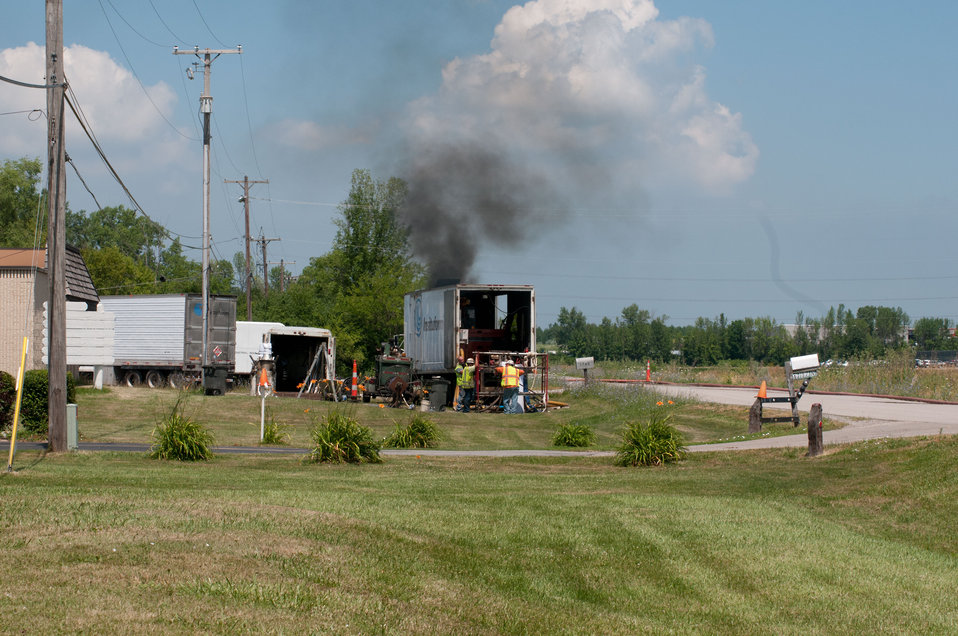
Gardens and roadways did not have to be dug up for the Buena Vista Township Phase II Sewer Project, in Michigan, where the United States Department of Agriculture funded the refurbishment and rehabilitation of 45,500 linear feet of defective sewer pipe, and more than 200 manholes; on Tuesday, July 19, 2011. The project includes the construction of an off-site excess flow basin; construction of a pump station; and improvements at the wastewater treatment plant. The system will serve 2,349 residential and 177 commercial customers and will bring the township into compliance with environmental regulations regarding pollutant discharges.
Inspections revealed that the 1960s sanitary sewer system had inflow from storm and rainwater systems and overflowed into the sanitary sewer system. Infiltration was found in the form of cracks, and other failures that allowed groundwater to enter. Rather than digging up the old system, rehabilitation with a cured-in-place-pipe (CIPP) method was chosen. This provides up to a 50% savings and the liner is projected to last 50-100 years. CIPP repair of the 8-30” diameter pipes involves pulling a resin-saturated fabric liner through a damaged pipe, which is then cured with steam or hot water to form a tight-fitting, joint less replacement pipe. Trenchless repair methods require less digging than traditional “dig and replace” repair methods and minimize damage to yards and landscaping. There are two of these teams and one manhole rehabilitation to seal the underground casting frame or brick structure. They process 600-800 feet per day.
Wade Trim Inc. Professional Engineer Tiffany Harrison said about working with the United States Department of Agriculture’s Rural Development “It was very easy, they make it very straight forward, in what paperwork they need. They were always available for questions.
USDA Rural Development has funded water and sewer projects in 117 Michigan communities serving more than 94,000 customers.
Senior Advisor to the Secretary of Agriculture Doug O’Brien said, “America will win the future by out-building, out-educating and out-innovating the world,” O'Brien said. “The Obama Administration is committed to the residents and business owners of Buena Vista Township in building the infrastructure needed to protect our environment and ensure clean water for future generations.” Being almost entirely surrounded by the Great Lakes, Michigan residents know that a small problem upstream usually leads to much bigger problems downstream and that the impact of water pollution extends far beyond the immediate community.